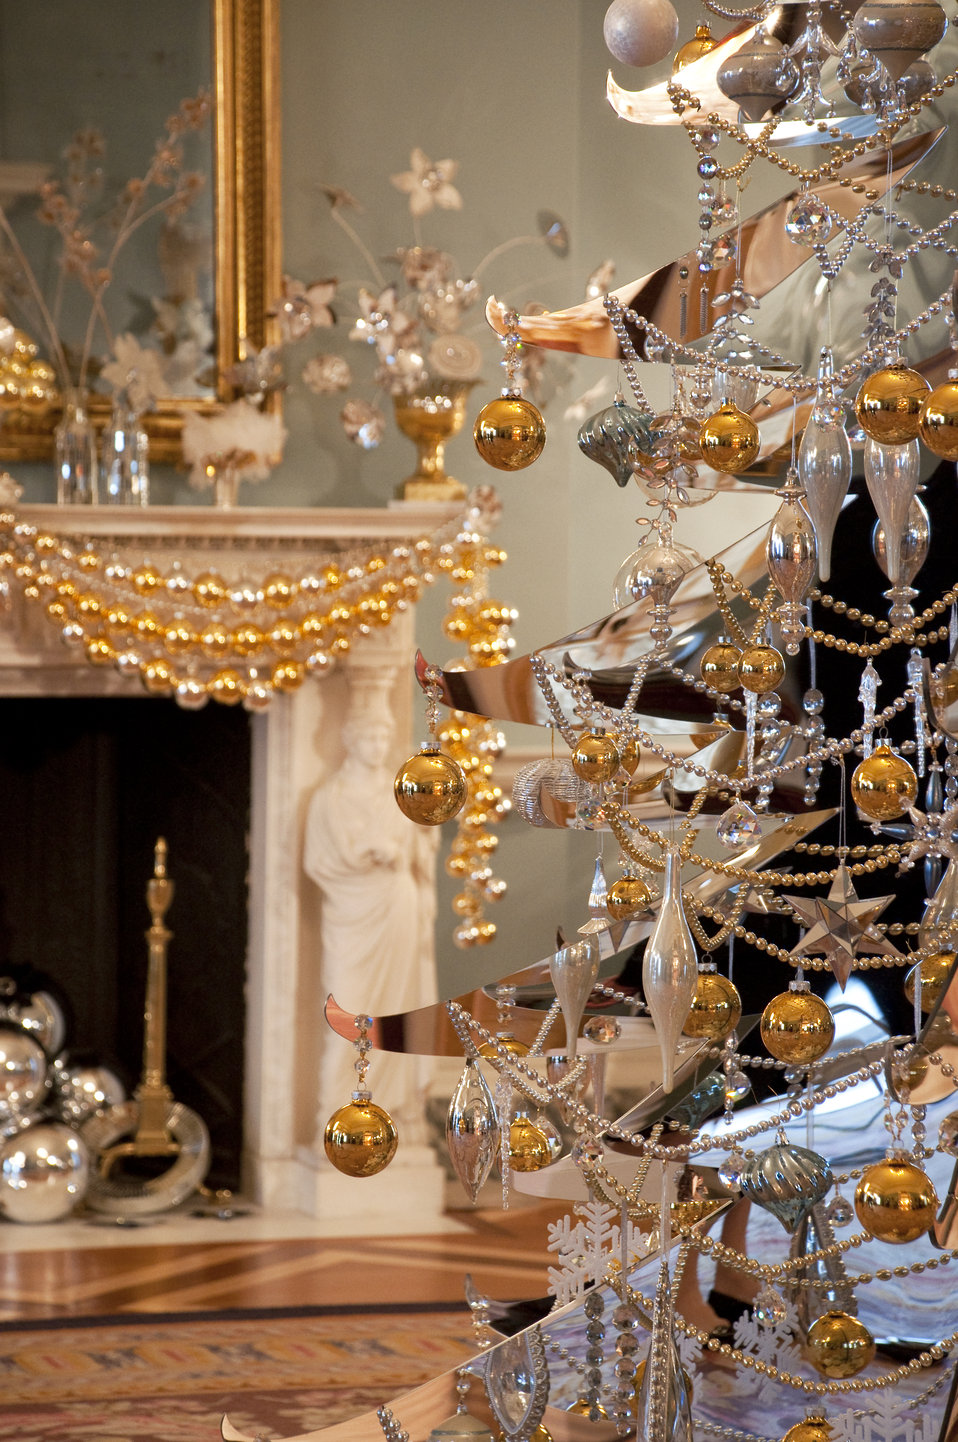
The U.S. Department of State Partners With Time Inc. and InStyle To Decorate the Thomas Jefferson State Reception Room

The U.S. Department of State partners with Time Inc. and InStyle to decorate the Diplomatic Reception Rooms for the Holidays in December 2010. Pictured in this photo is the Thomas Jefferson State Reception Room.